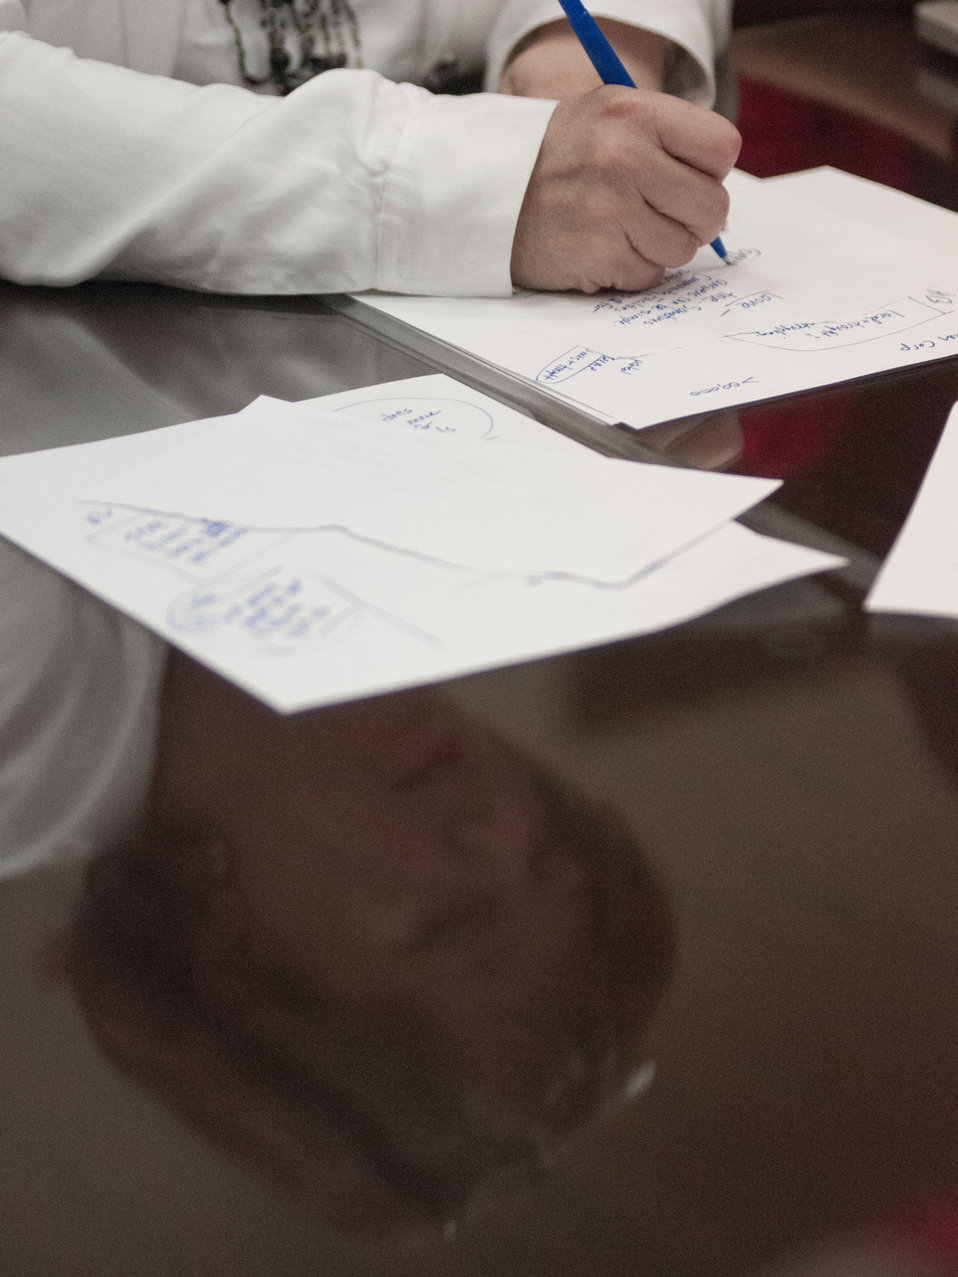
Agriculture Deputy Secretary Kathleen Merrigan, composes her response to questions before they are tweeted to the public audience, during a live Twitter chat focused on the Department’s support of local and regional food systems and the recent release of the 2.0 version of the Know Your Farmer, Know Your Food Compass on Tuesday, July 24, 2012, in Washington, D.C. Deputy Secretary Merrigan utilized her staff and other subject matter experts to provide useful answers to questions from the public during the #ASKUSDA Virtual Office Hours on Local Food.